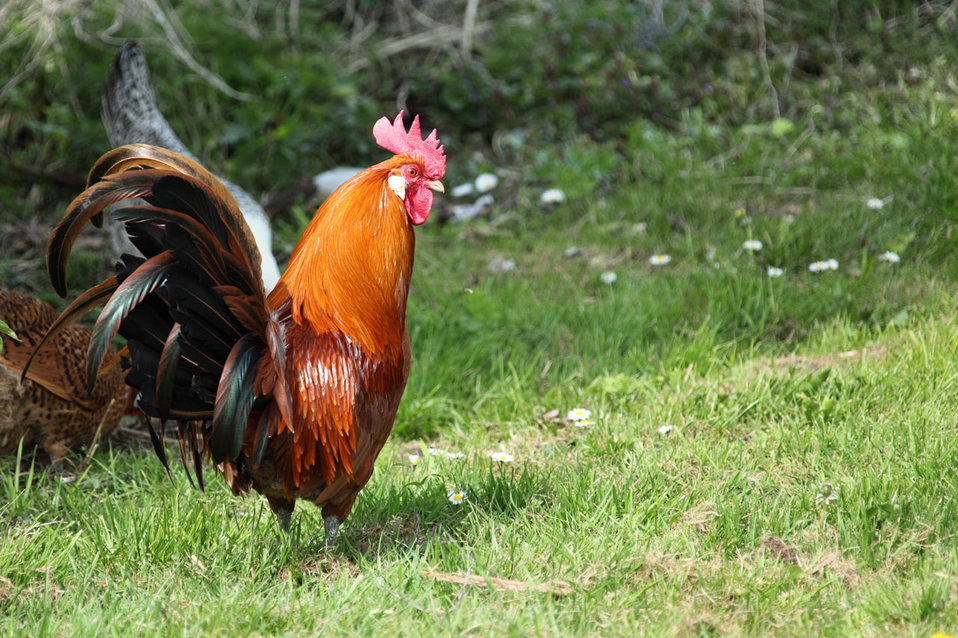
Rooster on grass.